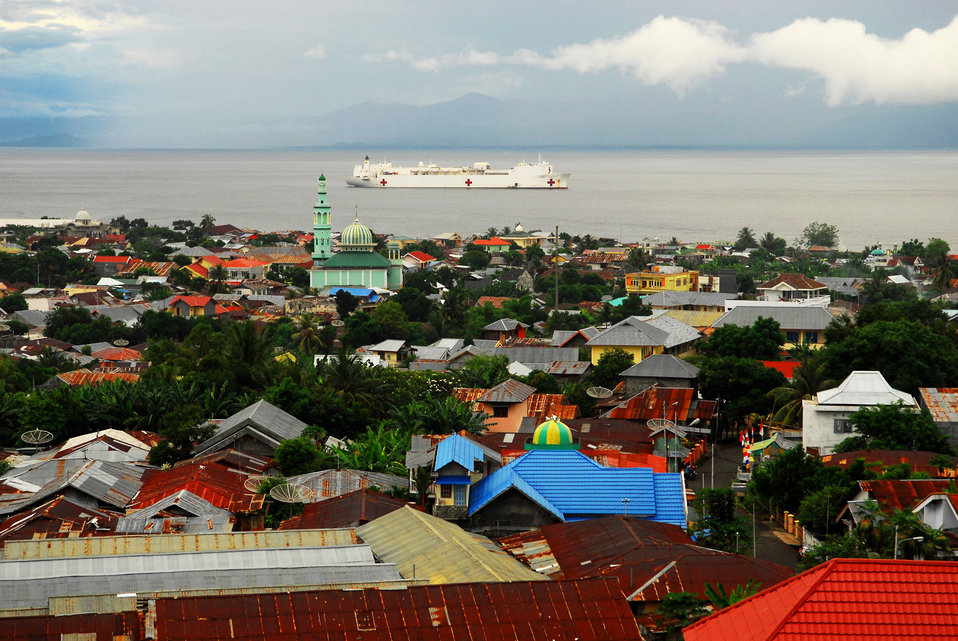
USNS Mercy Is Docked

The Military Sealift Command hospital ship USNS Mercy (T-AH 19) is docked in Ternate, Indonesia, on July 20, 2010. Mercy is in the North Maluku Islands conducting Pacific Partnership 2010, the fifth in a series of annual U.S. Pacific Fleet endeavors conducted in Indonesia as a disaster relief exercise aimed at strengthening regional partnerships.